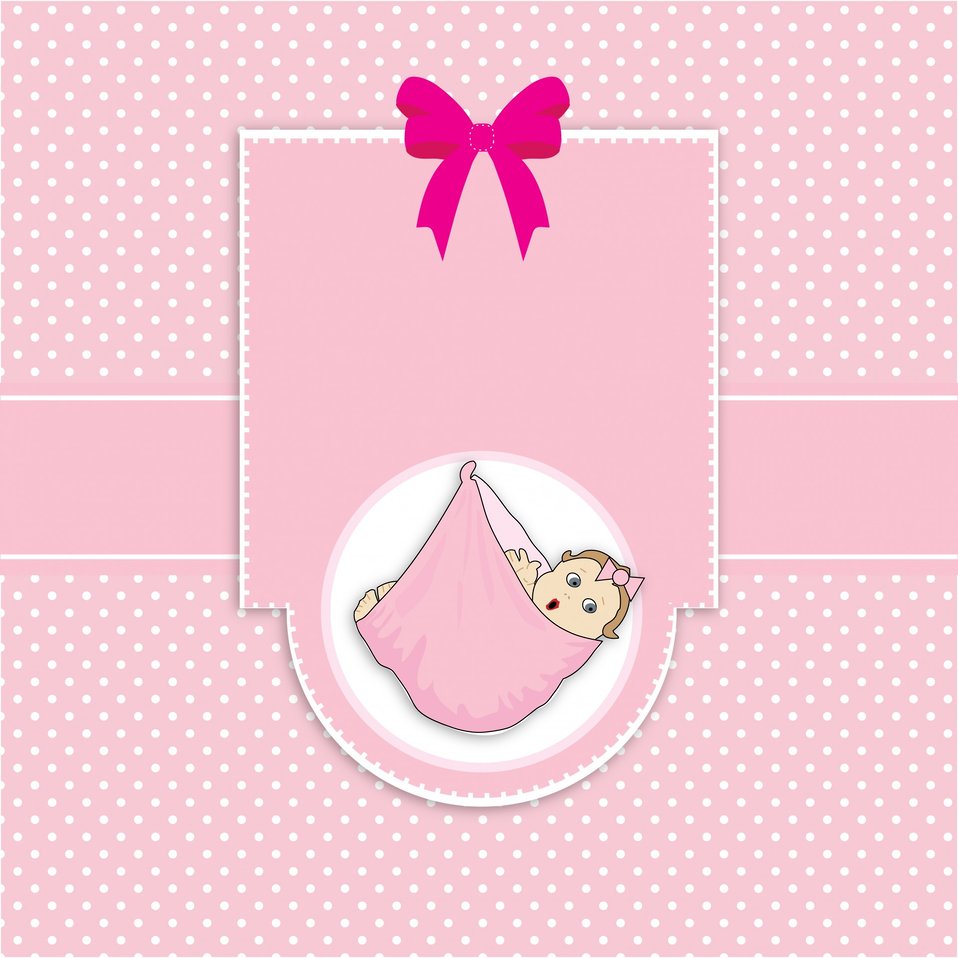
Baby girl arrival card

Cute baby girl arrival card template on pink and white polka dots background.